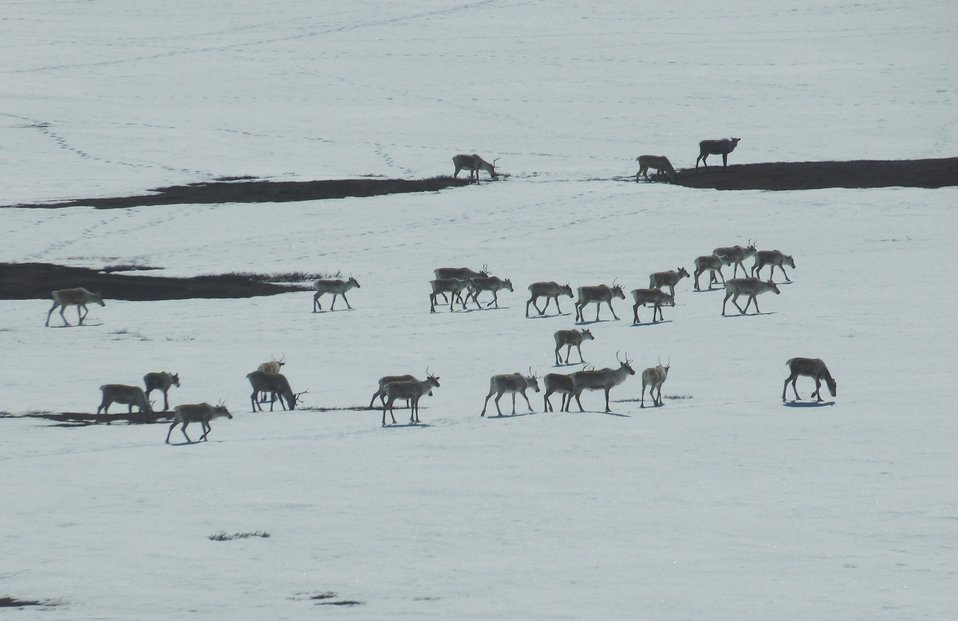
Caribou in Kilbuck Mountains on Yukon Delta National Wildlife Refuge

Photo credit: Kristine Sowl
USFWS, Yukon Delta National Wildlife Refuge